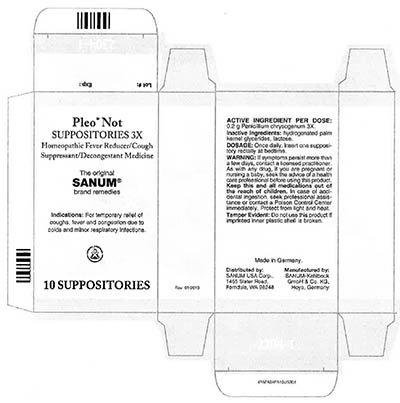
RECALLED – Homeopathic Drug Products

March 18, 2014 – Product Recall – Terra-Medica Issues Voluntary Nationwide Recall of Specified Lots of Pleo Homeopathic Drug Products Due to the Potential for Undeclared Penicillin.